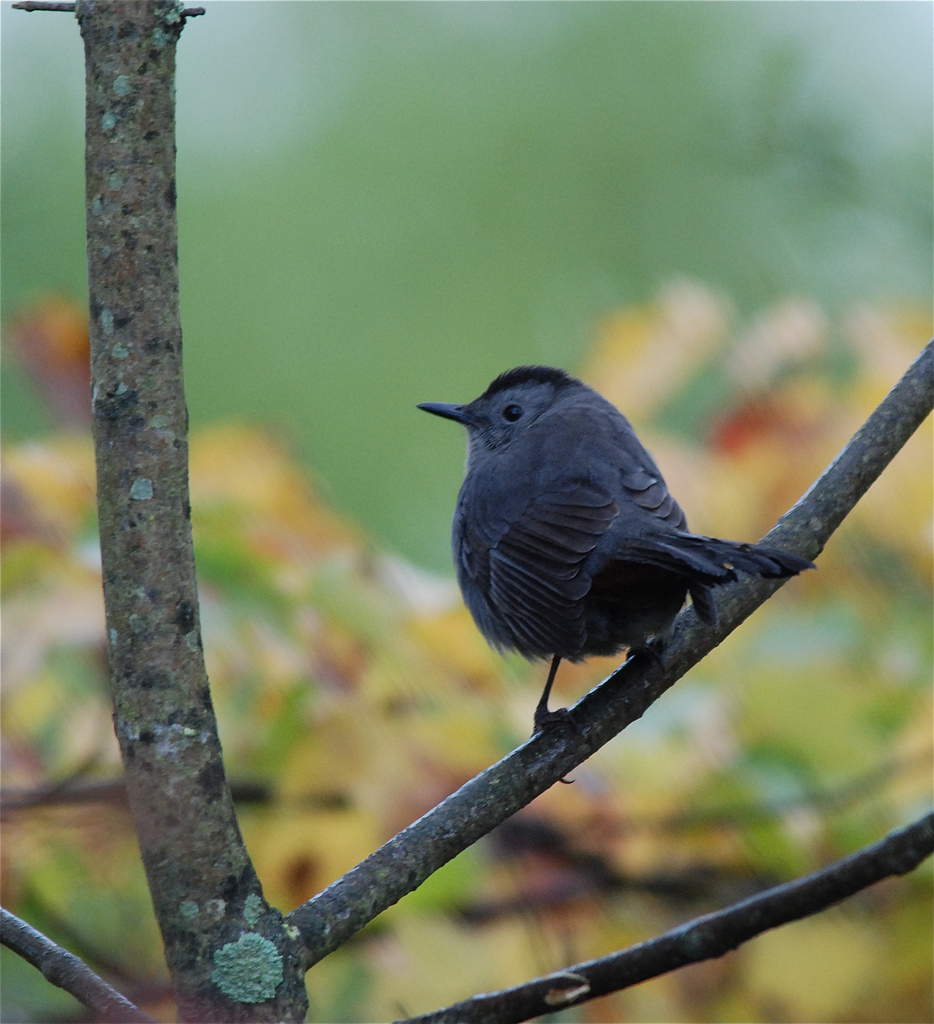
gray catbird

Great Swamp National Wildlife Refuge, NJ